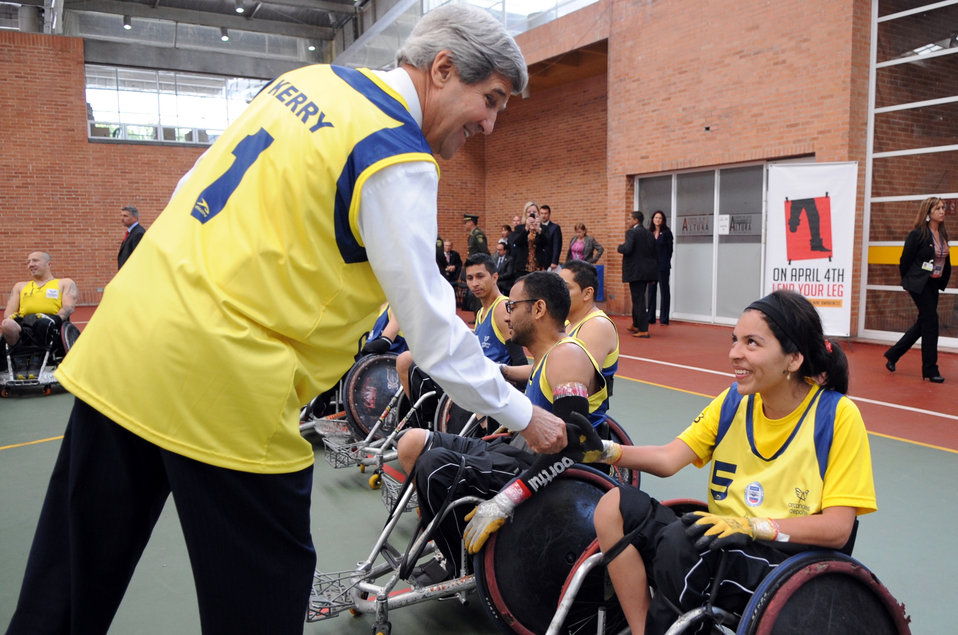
Secretary Kerry Meets a Member of the Colombian Wheelchair Rugby Team

U.S. Secretary of State John Kerry greets a member of the Colombian national wheelchair rugby team after watching a game involving wounded law enforcement officers in Bogota, Colombia, on August 12, 2013.